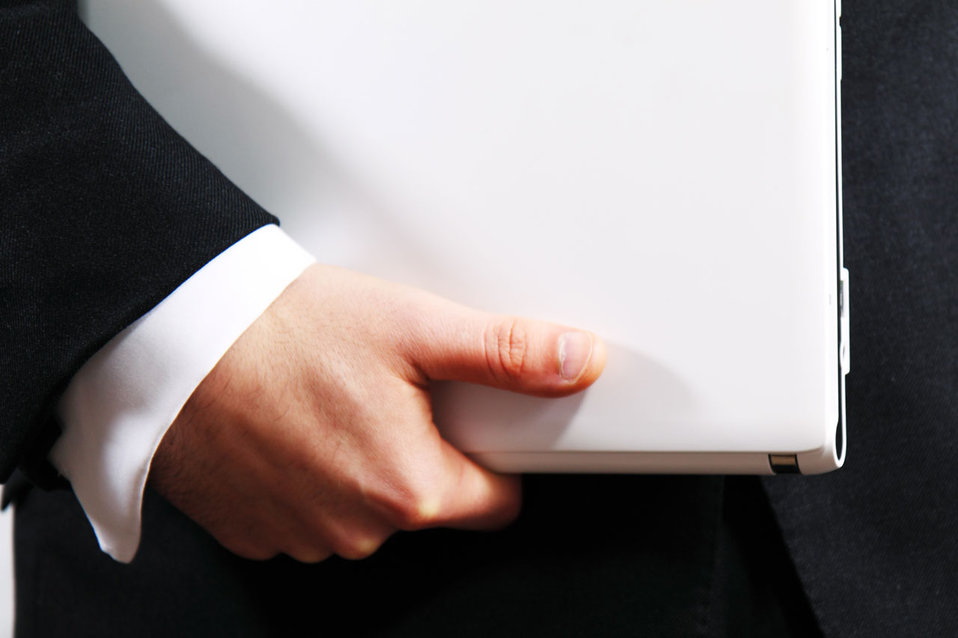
Hand holding laptop

Businessman holding laptop.